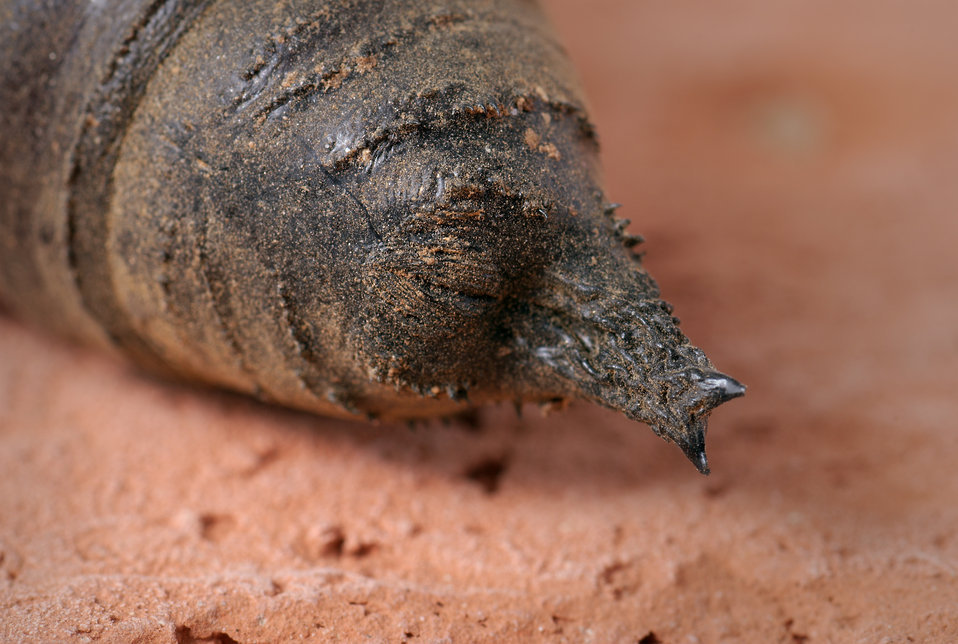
This 2008 image depicts a ventral view, i.e., from below, of a Regal Moth, Citheronia regalis pupa.